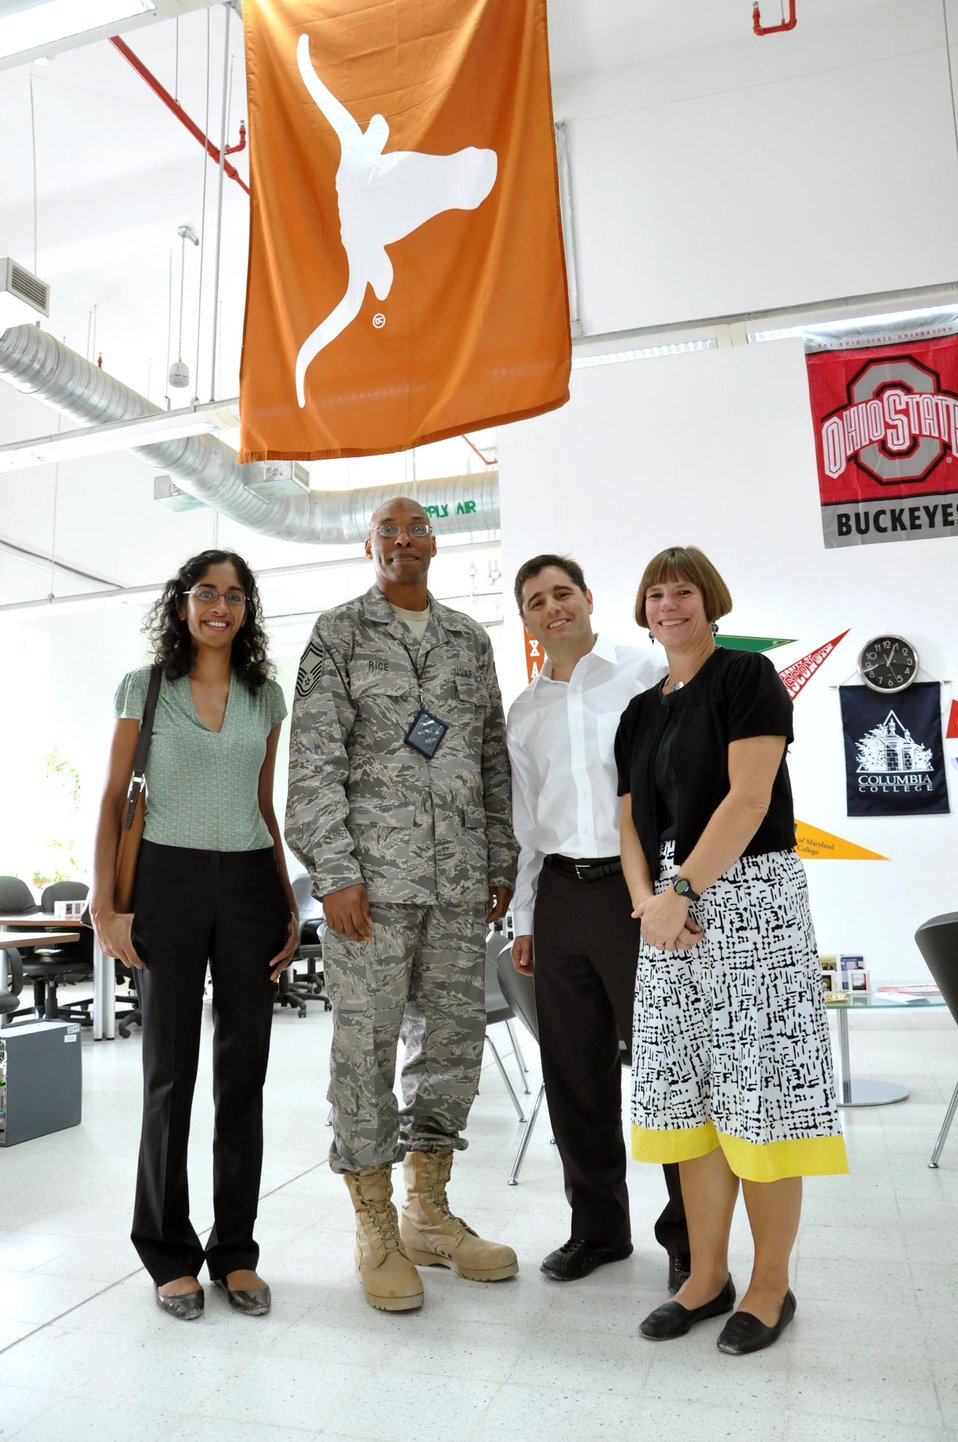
Chairman Genachowski visits with U.S. soldiers